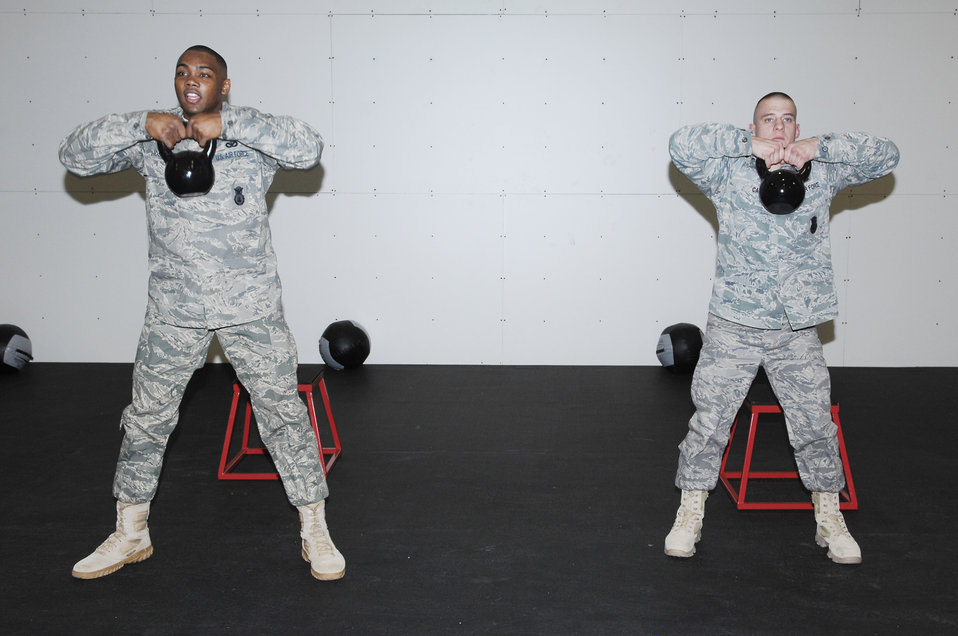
Luke opens combat PT center

Senior Airmen Jeremy Card and Jose Hoskins work out with kettlebells as part of a demonstration during the grand opening of the new combat physical training center Jan. 21, 2010 at Luke Air Force Base, Ariz. Airmen Card is from the 56th Security Forces Squadron.